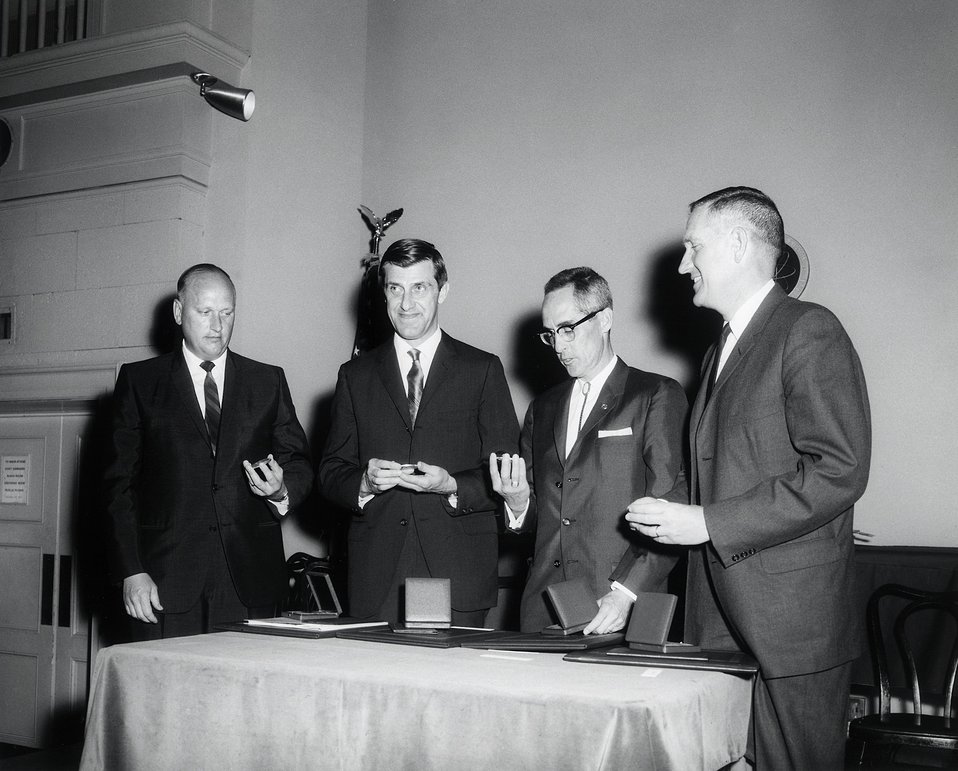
7th E.O. Lawrence Award Ceremony, April 27, 1966, Wash., D.C. Left to Right: Mr. Vanstrum, Dr. Huizenga, Dr. Anderson, Dr. Agnew.